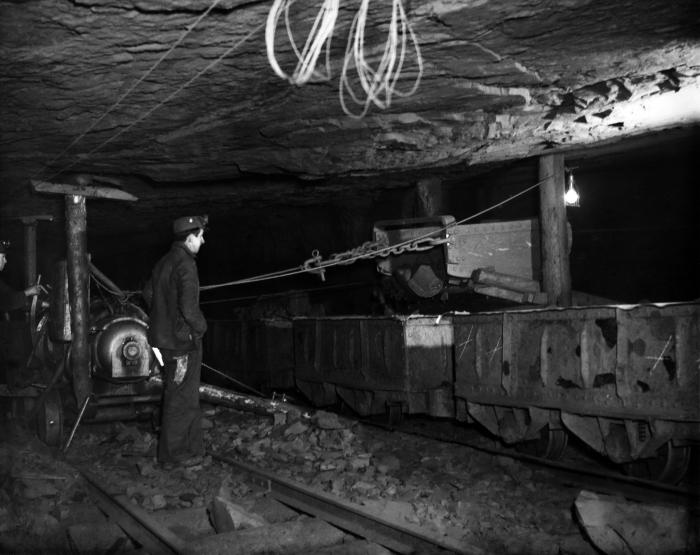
This historic image provided by the Center for Disease Control's (CDC), National Institute for Occupational Safety and Health (NIOSH), depicted a miner who was overseeing the loading of a string of rail driven coal bins, which would transfer newly excavated ore up and out of the mine to the surface. Note that the miner was not wearing any protective filtered breathing devices, which is now protocol under such circumstances. Mining coal, especially under circumstances such as these close quarters, facilitated coal dust inhalation, thereby, predisposing miners to the long-term negative health effects of this profession such as 'black lung disease', or 'coal-workers' pneumoconiosis' (CWP). Today, the Federal government's stringent regulations on the level of coal dust permissible in the air of a coal mine, and the requisite use of filtered breathing devices, has dramatically lowered the number of cases of black lung disease.